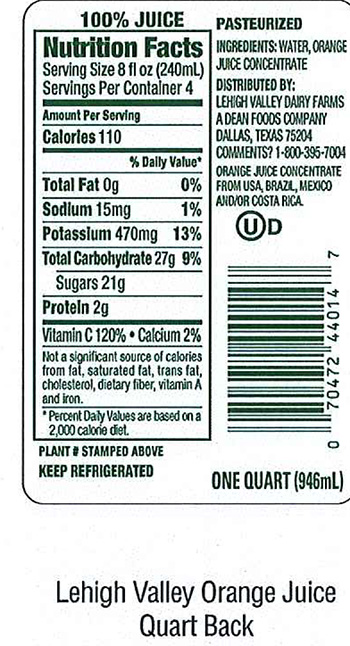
RECALLED – Orange Juice

March 3, 2014 – Product Recall – Lehigh Valley Dairy Conducts Voluntary Recall of Lehigh Valley, Swiss Premium, and Price Chopper Brand Orange Juice Because It May Contain Undeclared Allergen (Milk).